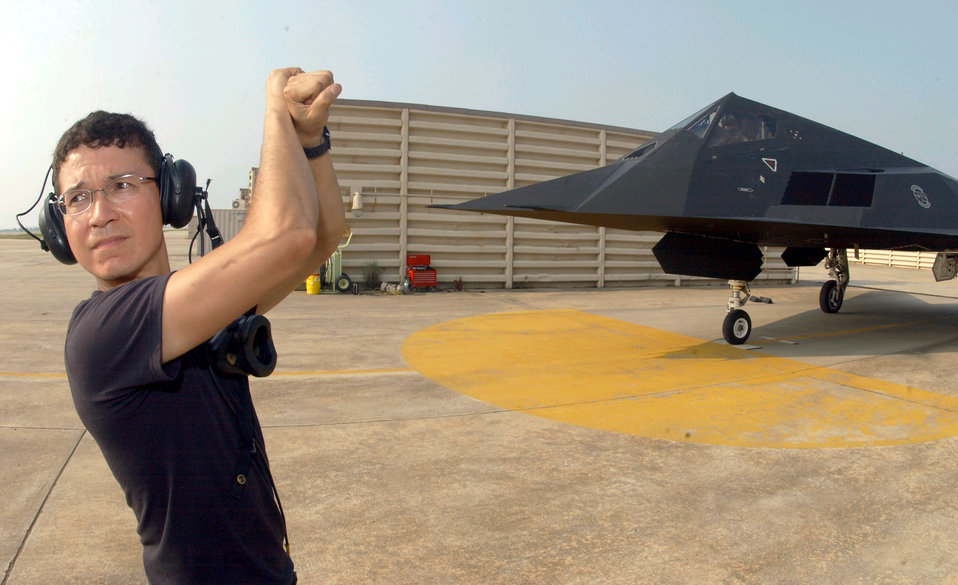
A stealth launch

KUNSAN AIR BASE, South Korea -- Senior Airman Michael Carrera takes a look over his shoulder before launching an F-117 Stealth Fighter here Aug. 3. Airman Carrea is a crew chief with the 9th Expeditionary Fighter Squadron.